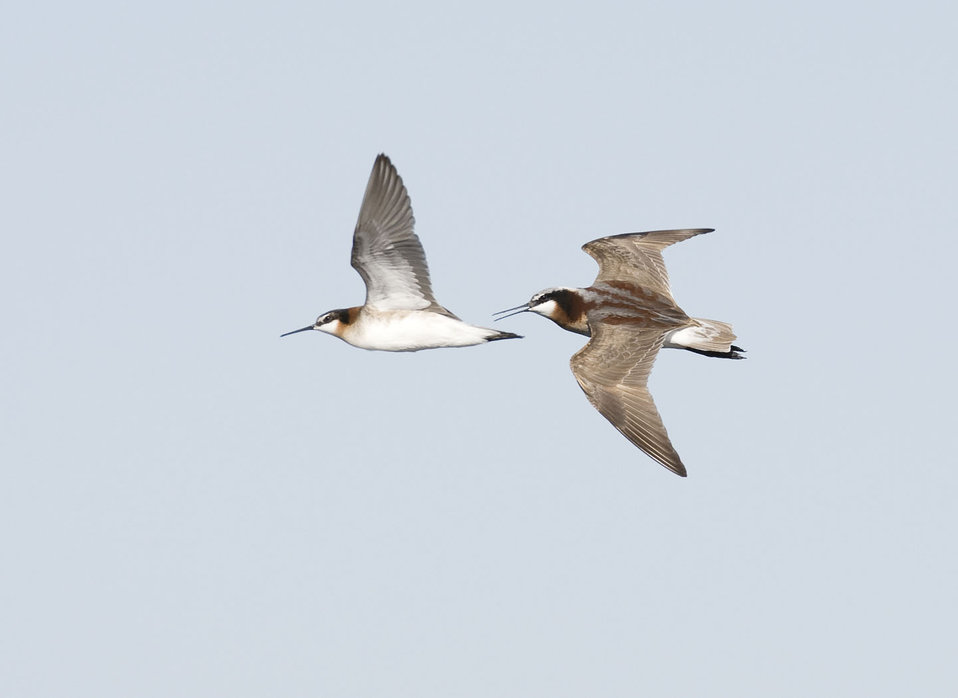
Wilson's Phalarope in Flight

The lands of the refuge were established to protect and provide habitat for migratory birds that cross State lines and international borders and are by law a Federal trust responsibility.

The refuge is of great value to waterfowl and shorebirds, as well as other migrating water-dependent bird species, because of the diversity of wetland and upland habitats that provide for the diverse life cycle needs of these species.